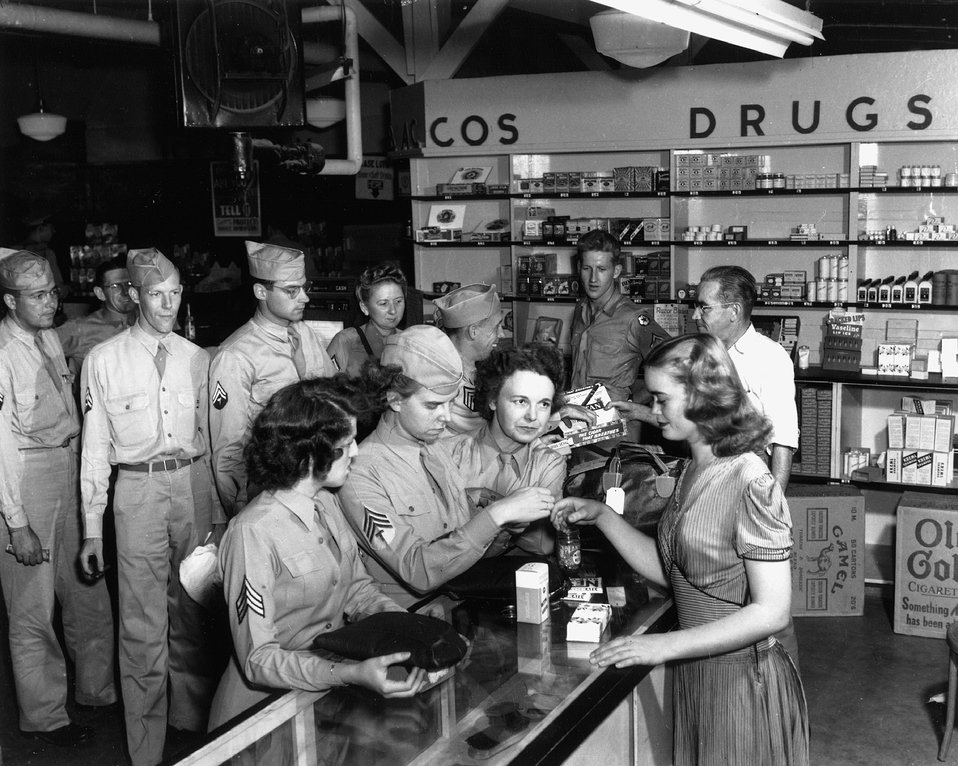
Army Post Exchange. c. 1946